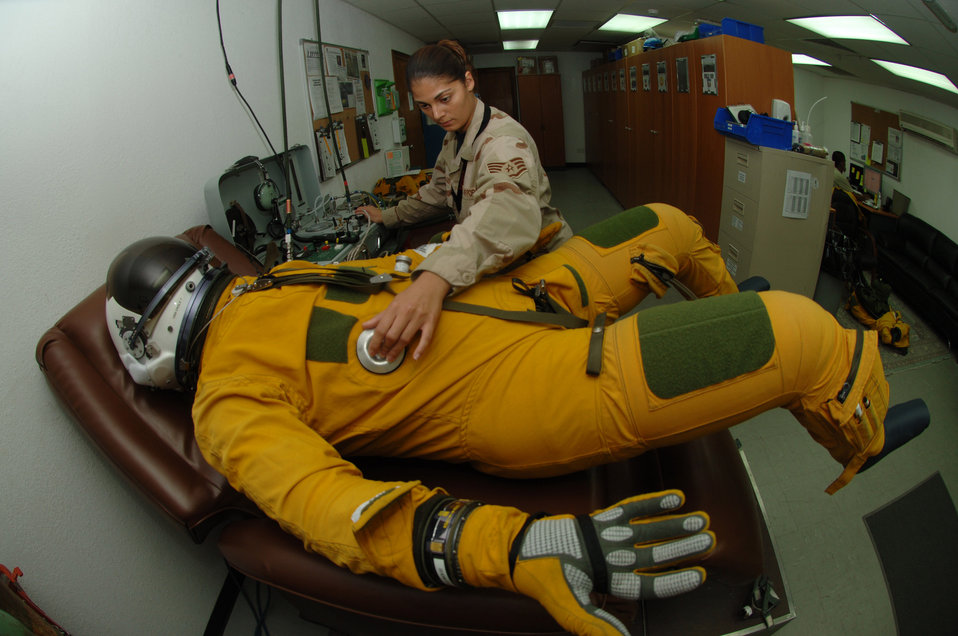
U-2 squadron continues to fly high

Staff Sgt. Nikolina Kreager, a life support specialist with the 99th Expeditionary Reconnaissance Squadron at an air base in Southwest Asia, ensures a U-2 Dragon Lady pilot is set for the day's mission by checking the flight suit to make sure it can pressurize properly at high altitudes. The 380th Air Expeditionary Wing hosts the only U-2 squadron in the area of responsibility, providing high-altitude intelligence, surveillance and reconnaissance for support in winning the war on terror.